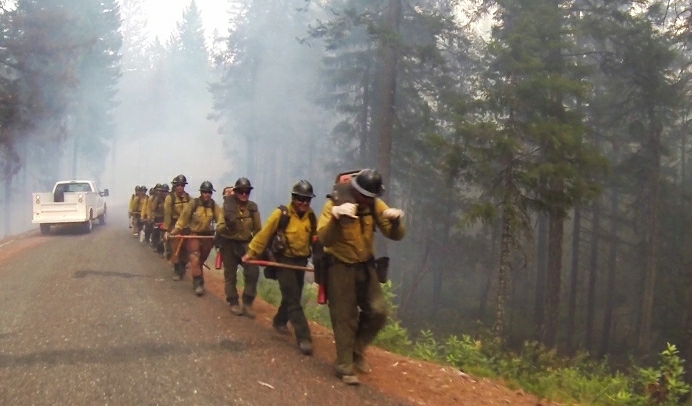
Geronimo Interagency Hotshot Crew, Department of the Interior (DOI) Indian Affairs (IA) Bureau of Indian Affairs (BIA) San Carlos Agency in Arizona; on assignment at the Big Windy Complex Wildlands Fire, approximately 15 miles west of Interstate-5 and East Northeast of Galice, Oregon, conducts a prescribed burn 'burnout' operation to help stop the main fire that may head toward this roadway, on Friday, Aug 9, 2013. The primary mission of the Interagency Hotshot Crews (IHC) is to provide a safe, organized, mobile and highly skilled hand crew for all phases of wildland fire suppression. The arduous duties and specialized assignments required of IHC personnel require uniform staffing, certification, training, equipment, communications, transportation, organization, and qualifications that adhere to interagency standards and guidelines.